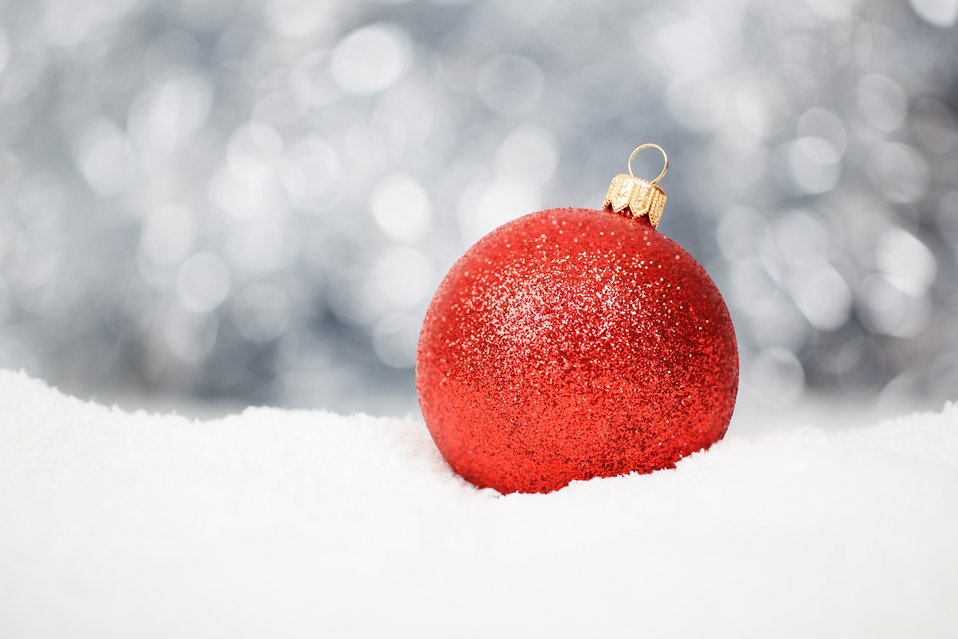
Red christmas ball in snow with silver bokeh background.